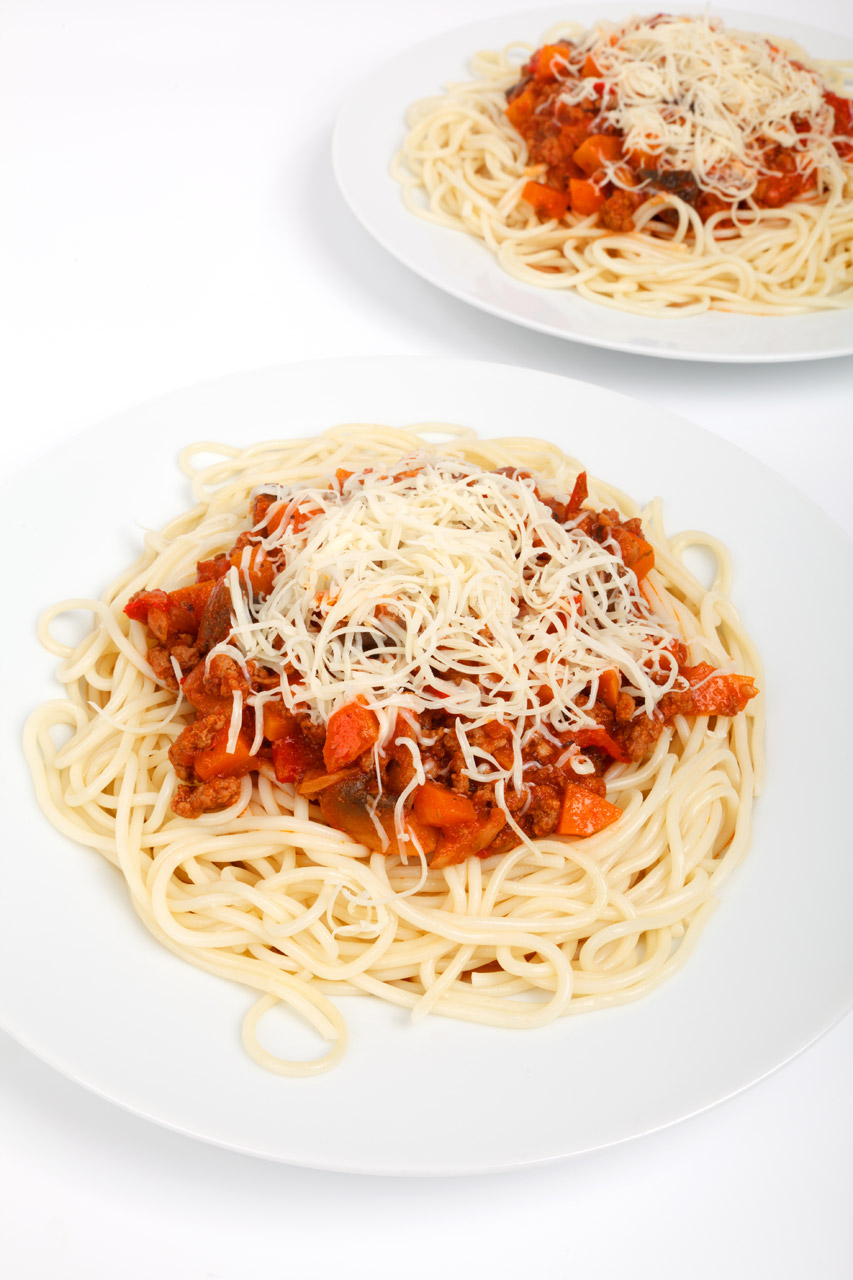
Spaghetti bolognese on plates with cheese on top on white background.